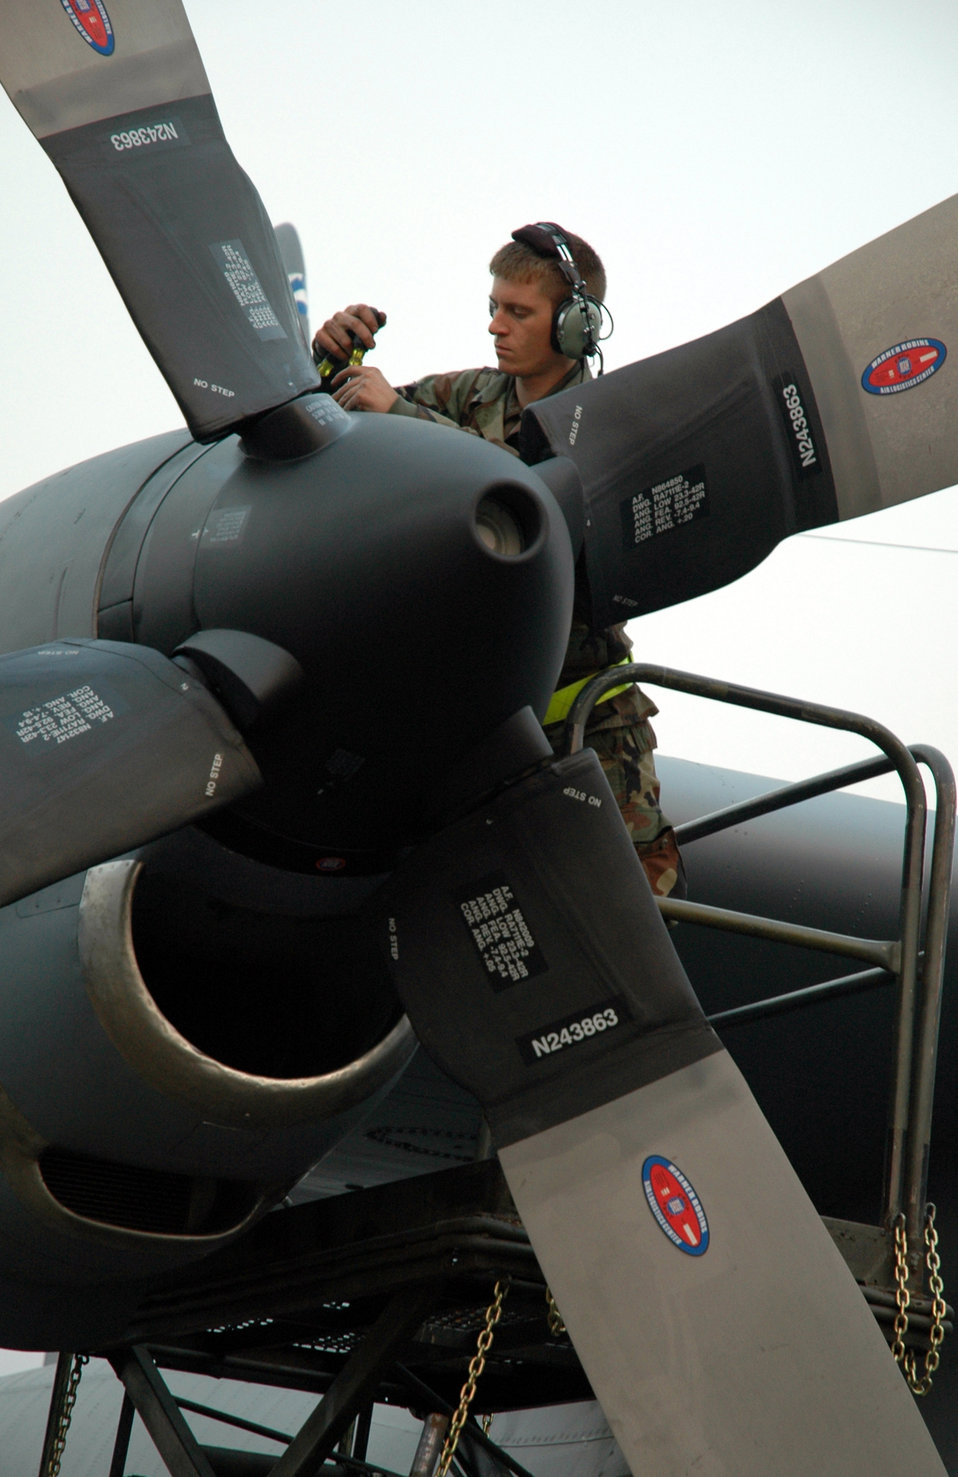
AMIS 2

KIGALI INTERNATIONAL AIRPORT, Rwanda -- Airman Shawn Perry tightens bolts on the engine of a C-130 Hercules in the early morning hours after it returned from a mission to bring Rwandan defense forces to the Darfur region of Sudan. The U.S. Air Force is set to bring more than 1,200 troops to the operation. Airman Perry is deployed from the 86th Air Maintenance Squadron at Ramstein Air Base, Germany.